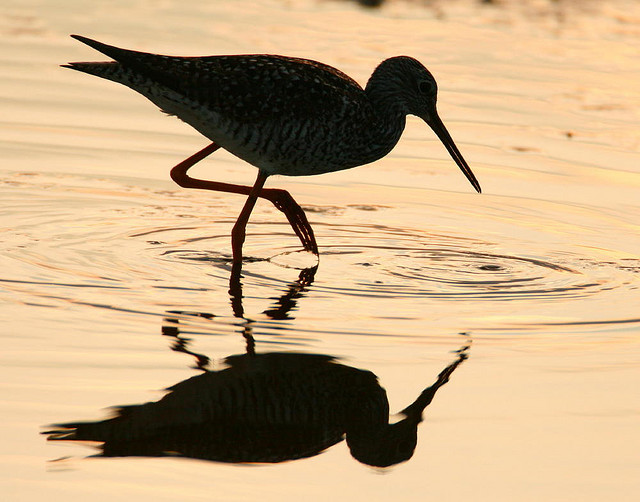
greater yellowlegs

Chincoteague National Wiildlife Refuge, VA